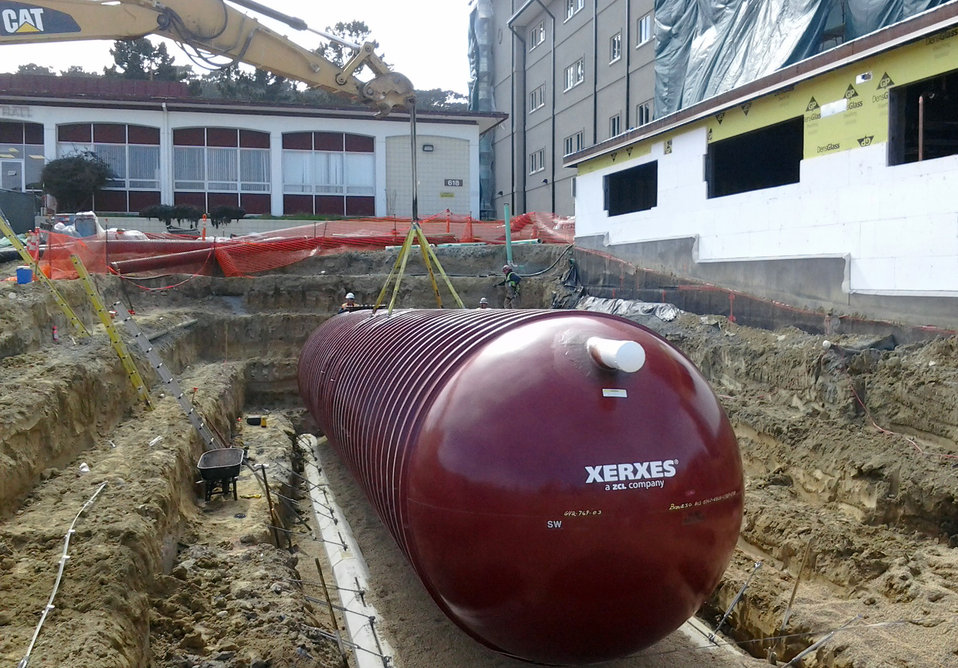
Going Green: Ancient technology helps Corps build green at Presidio

A 35,000-gallon tank is put into place next to a new general instruction building under construction at the Presidio of Monterey, Calif., March 25, 2013. The U.S. Army Corps of Engineers Sacramento District is overseeing construction of the building, which is designed to reach a silver rating under the Leadership in Energy and Environmental Design program. The 35,000-gallon tank will collect rain water from the building’s roof, which will then be used to help supply the building’s plumbing system.